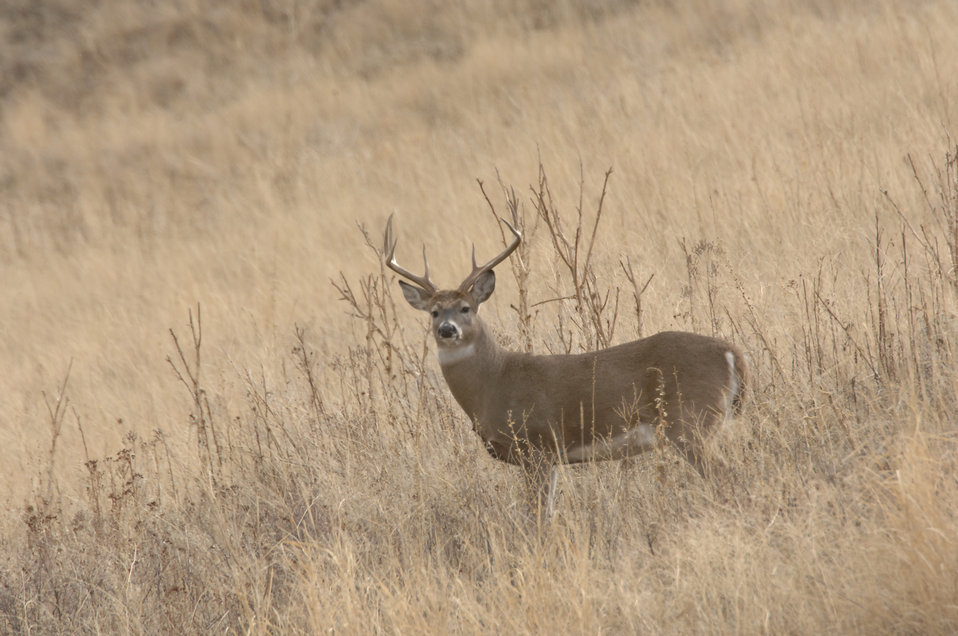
White tailed deer graze in the National Bison Range Wildlife Refuge in Montana on November 17, 2007. The U.S. Fish and Wildlife Service administers this refuge as part of the National Wildlife Refuge System. The refuge was established in 1908 and is one of the oldest Wildlife Refuges in the nation and was established to support a population of American bison. There are approximately 350-500 American bison. Other large wildlife found on the Range includes elk, whitetail and mule deer, pronghorn antelope, bighorn sheep and black bear.